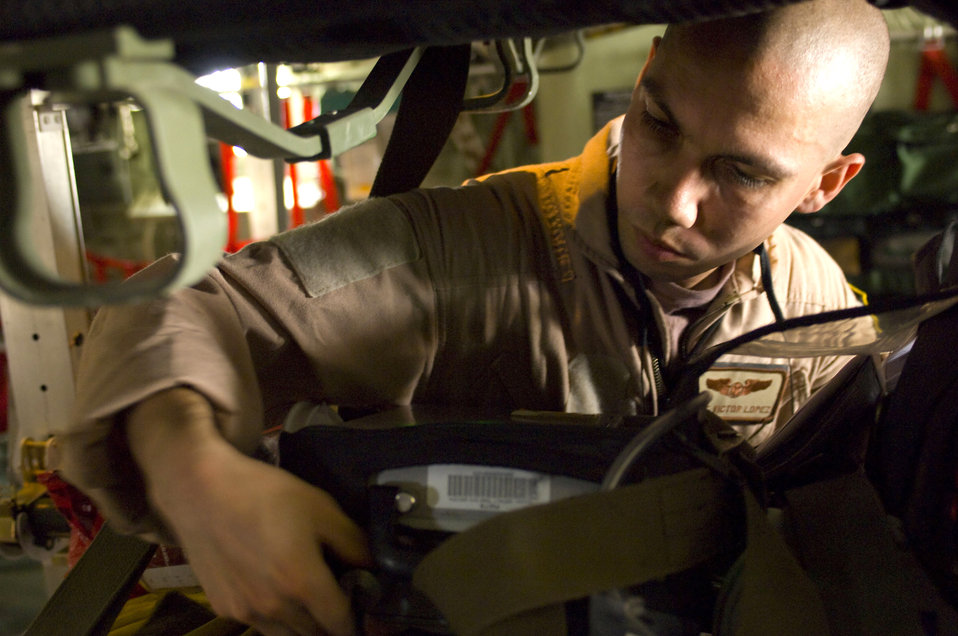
Airframes transform to 'aerovac'

Staff Sgt. Victor Lopez checks the functionality of medical equipment on board a C-130 Hercules July 8 at Bagram Air Field, Afghanistan. The function check is one step in the conversion of the C-130 for an aeromedical evacuation. The team converting the C-130 is with the 455th Expeditionary Aeromedical Evacuation Flight and are deployed from the 375th Aeromedical Evacuation Squadron. The members are deployed from Scott Air Force Base, Ill.